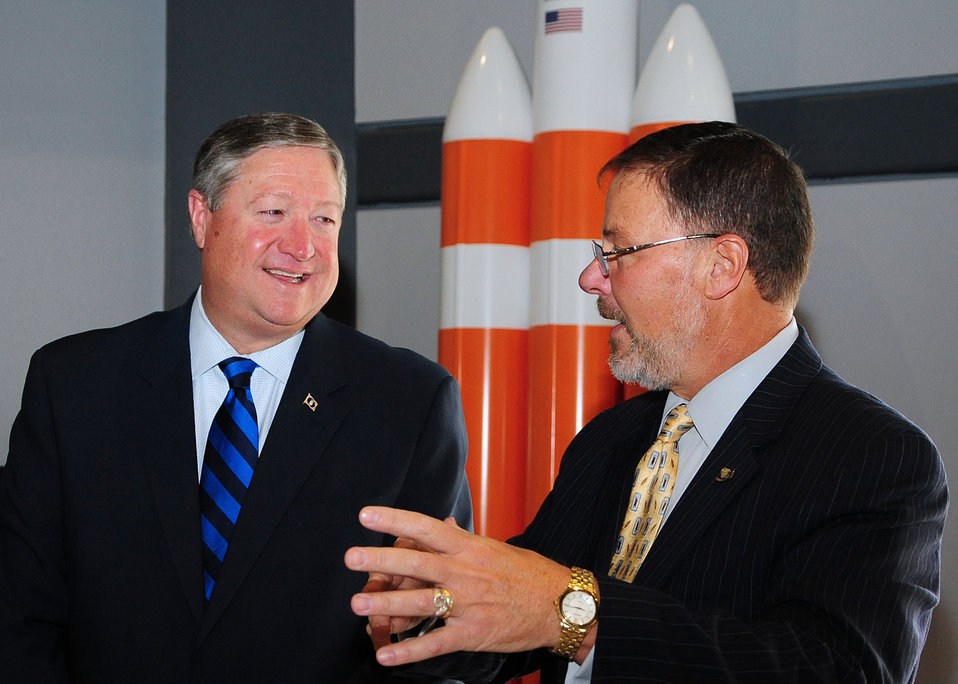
Donley talks budget priorities

Space Foundation CEO Elliot Pulham (right) explains the
foundation's headquarters renovation to Secretary of the Air Force Michael
Donley during his visit to Colorado Springs, Colo., Jan. 27, 2012. Donley
was in Colorado to welcome President Obama to Buckley Air Force Base, near
Aurora, Colo., on Jan. 26, 2012, and to discuss Defense Department budget
priorities with local community, military and business leaders.